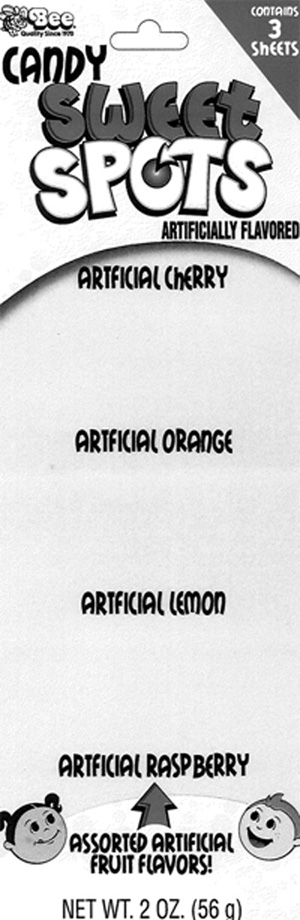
RECALLED – Candy “Sweet Spots”

December 12, 2013 – Product Recall – Bee International Issues Allergy Alert on Undeclared Egg in 'Sweet Spots'.